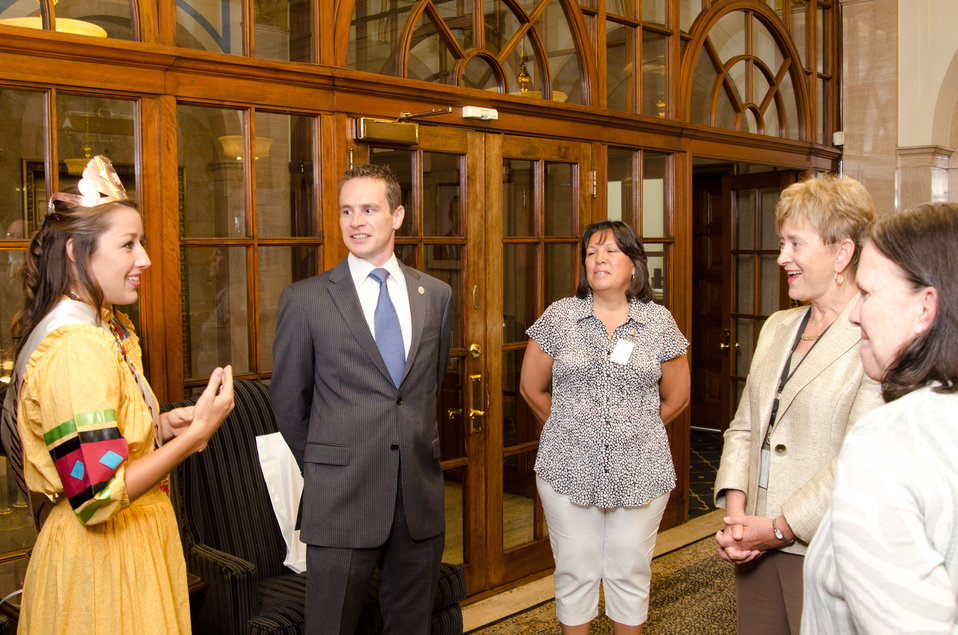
Miss Cherokee 2010-2011 Brooke Hudson and officers of the Cherokee nation met with U.S. Department of Agriculture staff members in Washington, DC, on Tuesday, August 9, 2011 USDA Photo by Lance Cheung.